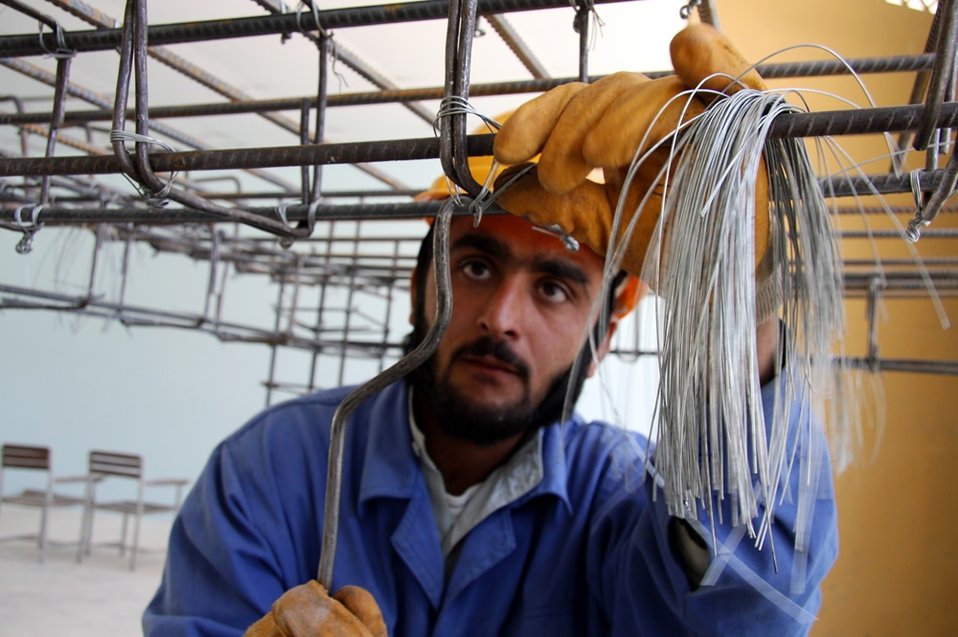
KCC